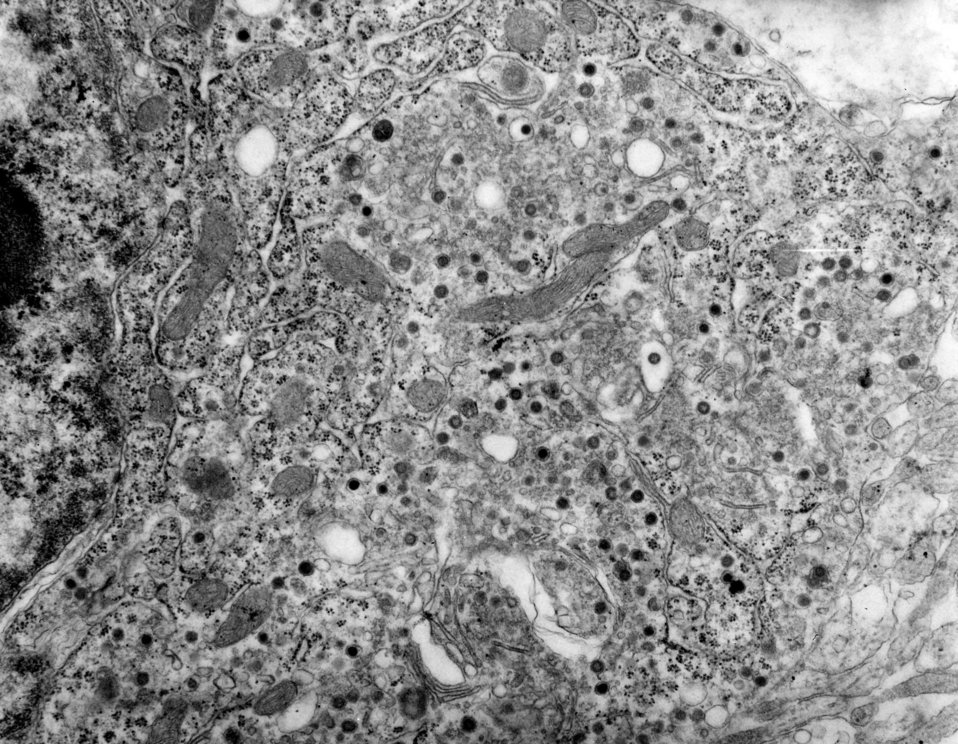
Magnified approximately 34,000x, this transmission electron micrograph (TEM) depicted a tissue section that had been infected with Rift Valley fever (RVF) virus. RVF virus is a member of the genus Phlebovirus in the family Bunyaviridae and was first reported in livestock in Kenya around 1900. It is found to be an acute, fever-causing viral disease that affects domestic animals (such as cattle, buffalo, sheep, goats, and camels) and humans. RVF is most commonly associated with mosquito-borne epidemics during years of unusually heavy rainfall.